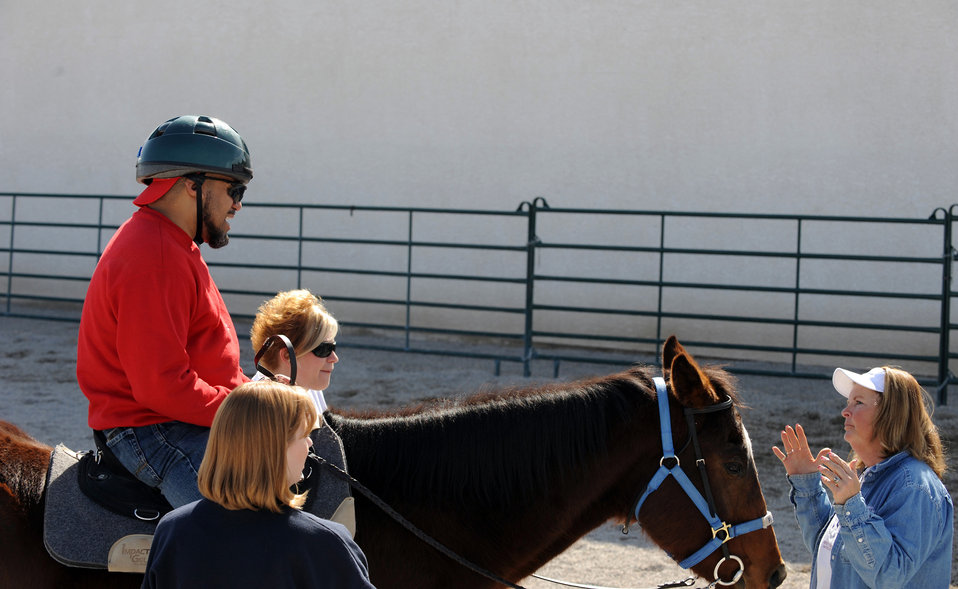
Horses Healing Heroes

Laurie Willmott (right), owner and founder of Spirit Therapies in Las Vegas, Nev., and several volunteers teach Kim Tanner, a retired Army transportation specialist, the art of horseback riding as part of the Horses Healing Heroes program. He sustained severe injuries after being struck by an improvised explosive device in Iraq in 2005. The program serves active-duty military and veterans who have been diagnosed with physical and or mental challenges.